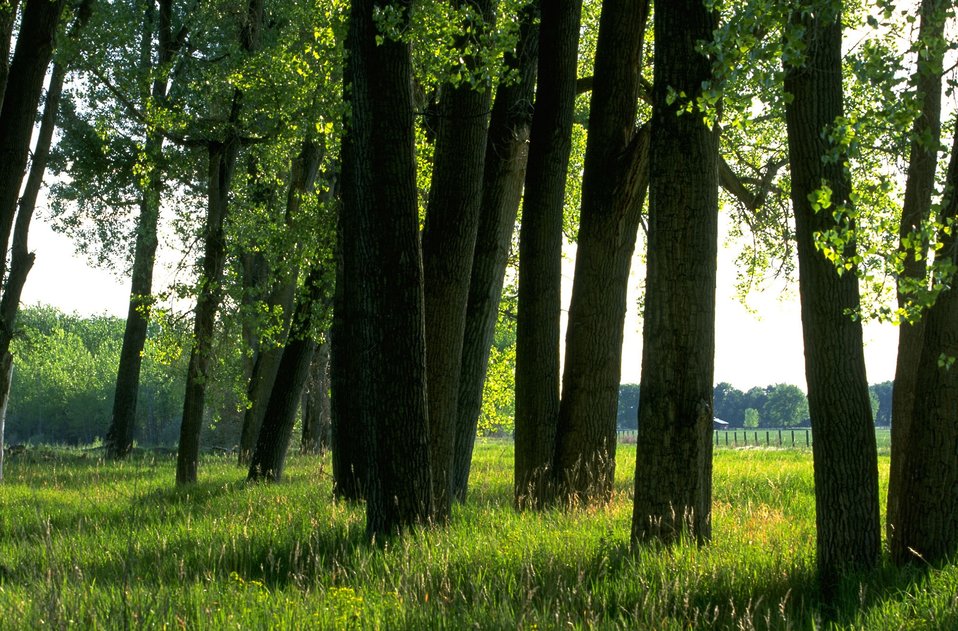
Cottonwood tree grove and flood plain meadows east of parking lot along the Clark's Fork of the Yellowstone River